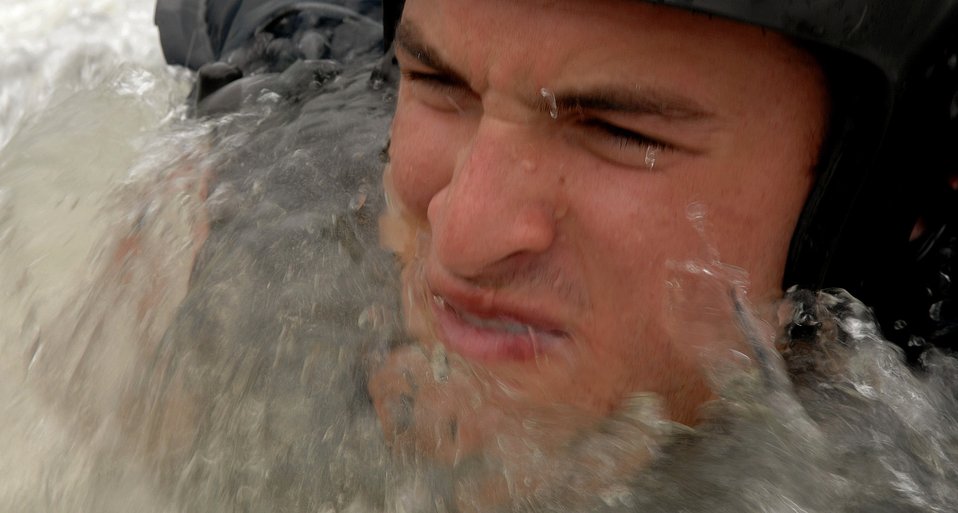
Water Survival Training

Air Force Academy Cadet Domingo Astiasaran participates in a parachute disentanglement exercise during water survival training. This training prepares a pilot to survive landing in water with his or her parachute still attached.